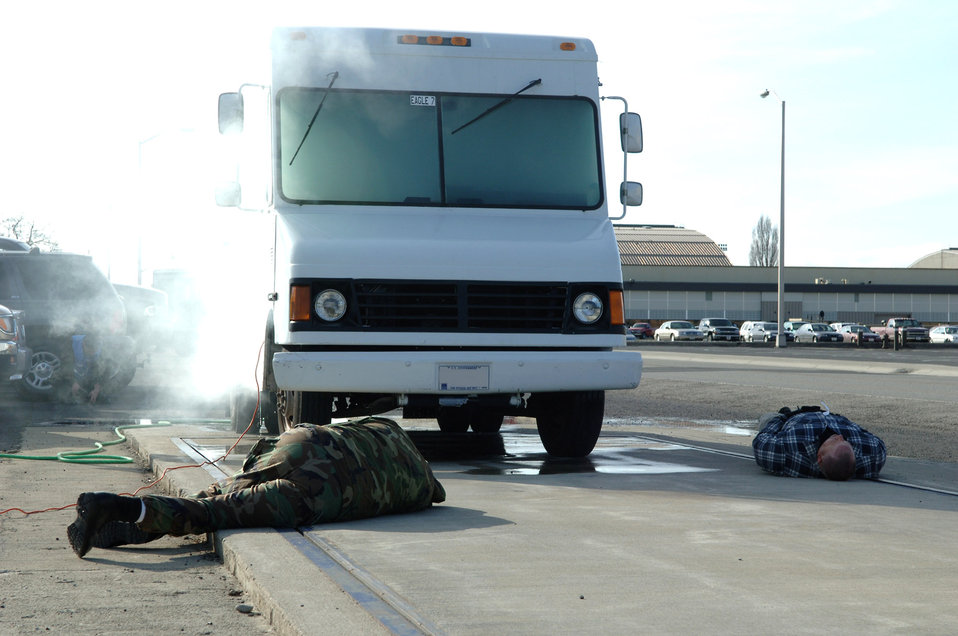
Fairchild puts readiness to the test

Two simulated victims lay on a truck scale April 19 after inhaling fumes coming from a punctured tank of gas during an exercise held at Fairchild Air Force Base, Wash. The fumes were simulated chlorine to test the base's ability to respond to a weapon of mass destruction.